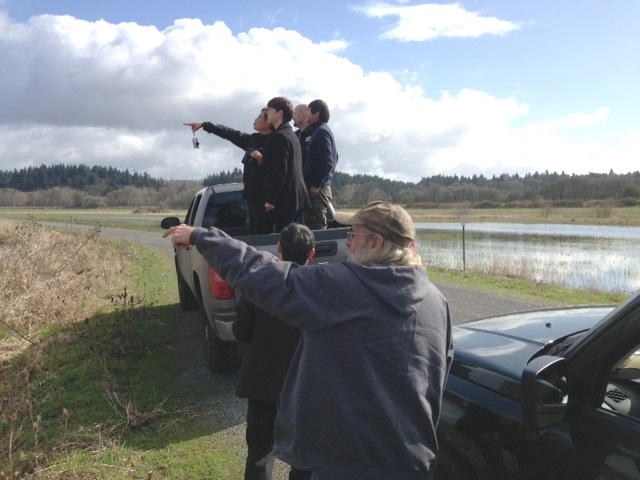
U.S. Department of Agriculture (USDA) Animal and Plant Health Inspection Service (APHIS) Wildlife Services (WS) specialist Danny Craig points out nutria damage to visiting South Korean researchers at Ridgefield National Wildlife Refuge (NWR) in Washington state.USDA photo by David Willimas.